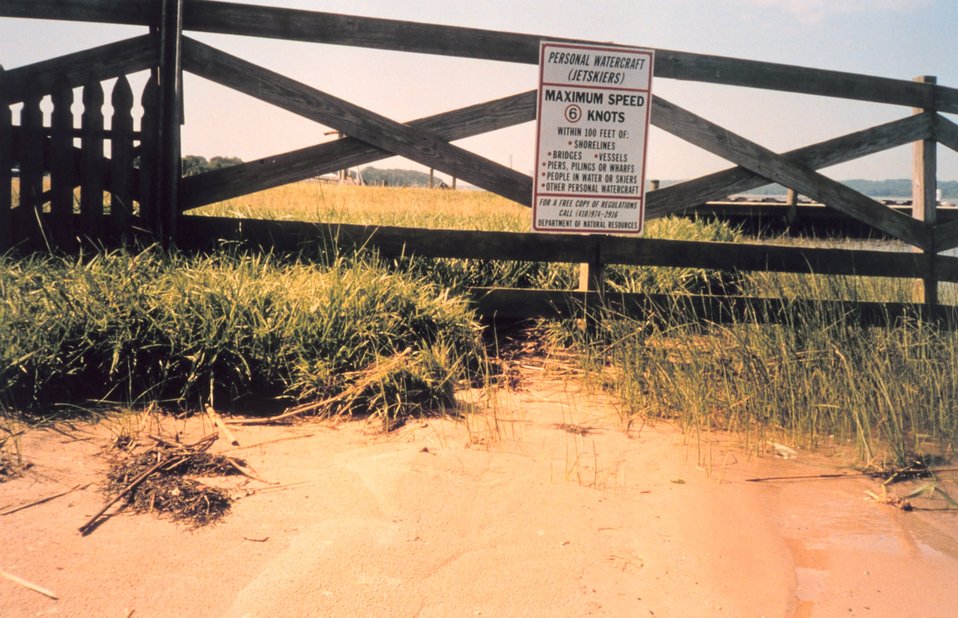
Erosion - ironically below a sign stating boat speed limit to minimize wake and erosion.